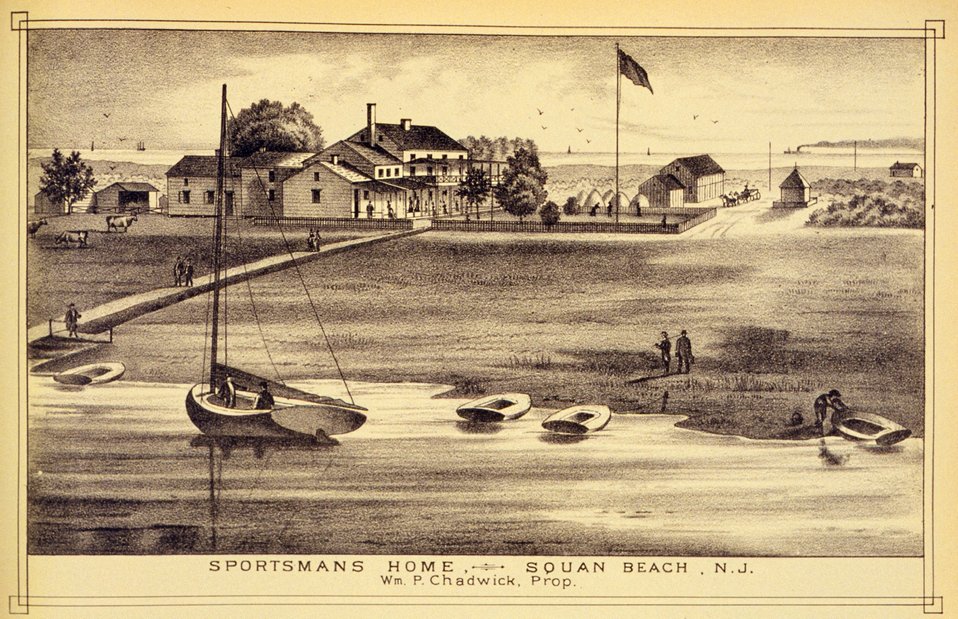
Sportsman's Home, Squan Beach, N.J. P. 291. 'Historical and Biographical Atlas of the New Jersey Coast,' by T. F. Rose, 1878.